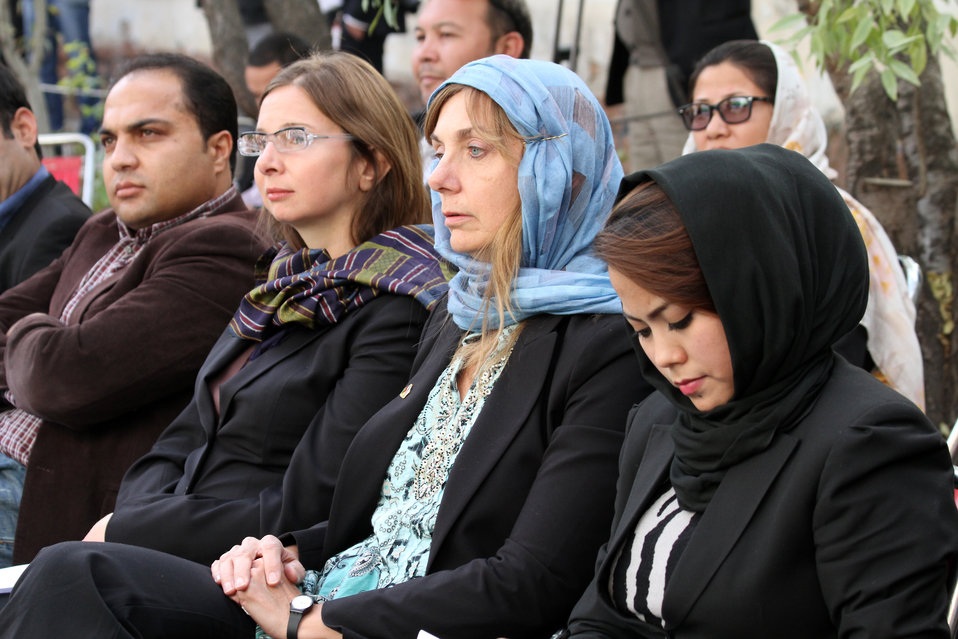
Afghan Youth Festival

Internews - USAID